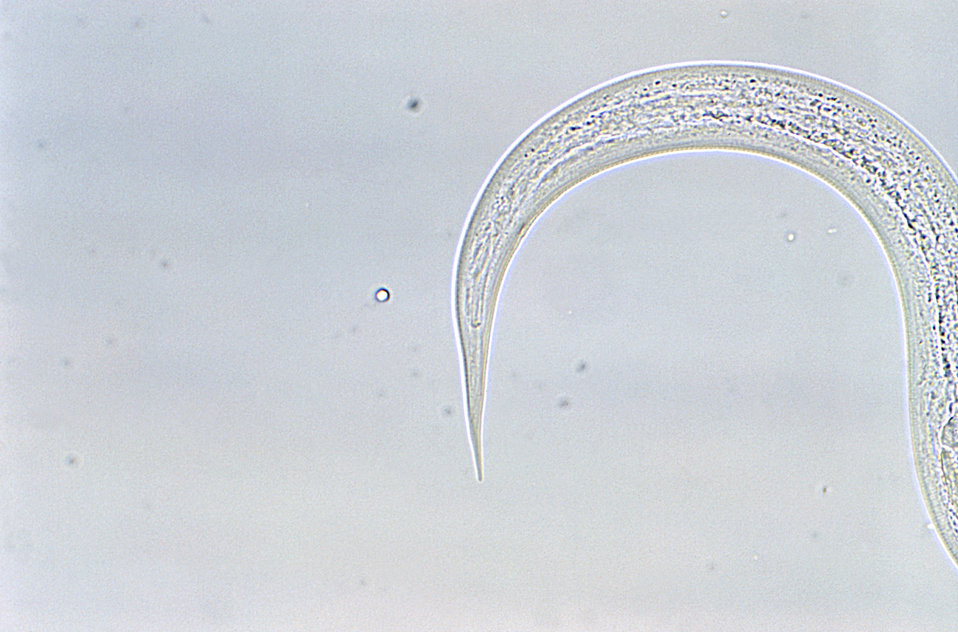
Hookworm filariform larva.